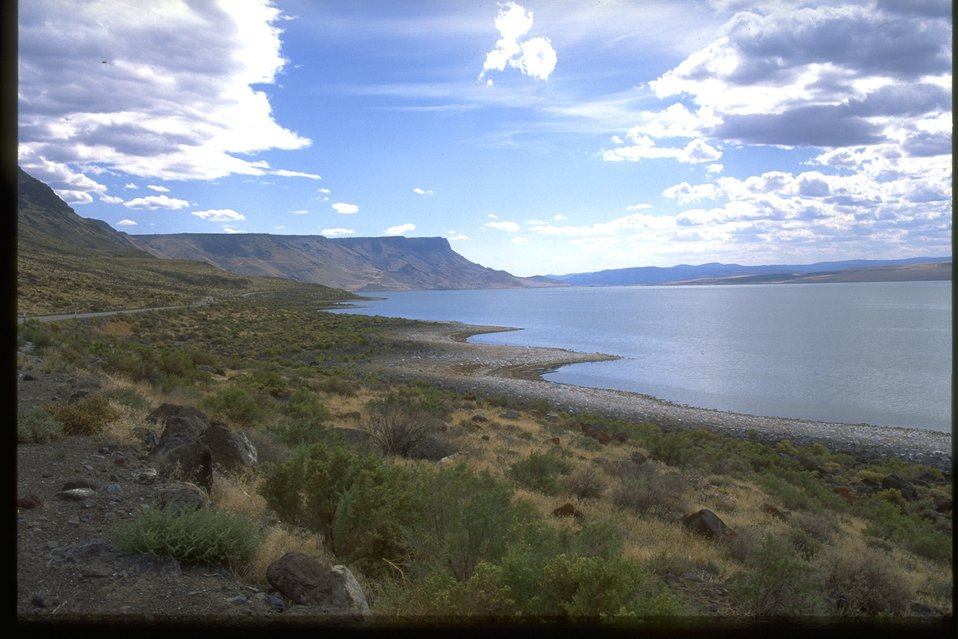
Scenic view of Abert Lake in Eastern Oregon.